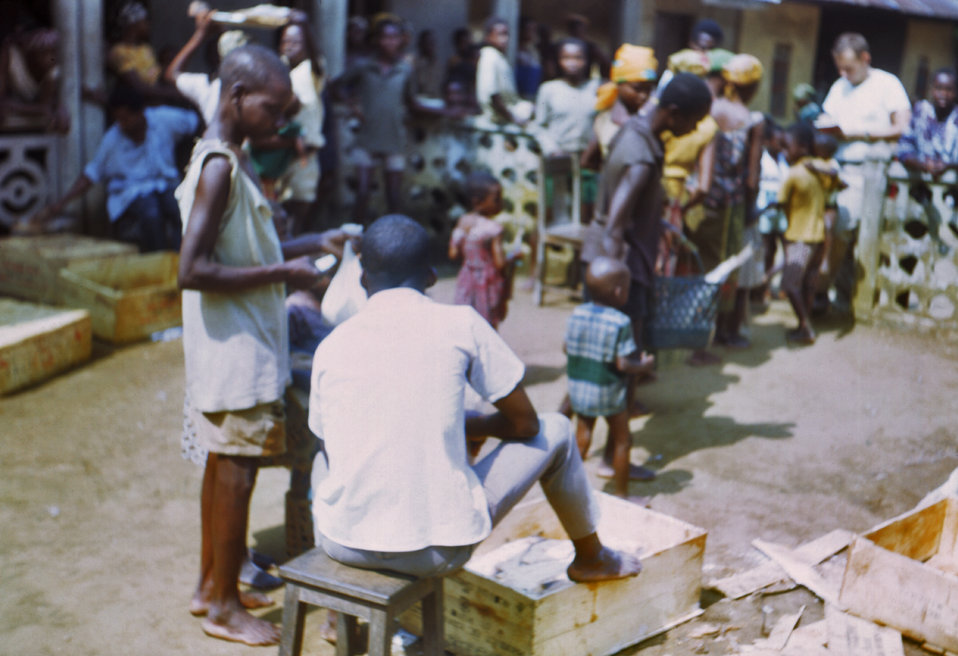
This 1968 photograph showed EIS officer Godfrey Oakley in the background as he was checking over nutrition figures obtained through nutritional assessments of Nigerian refugees during the CDC-run nutrition screening program.